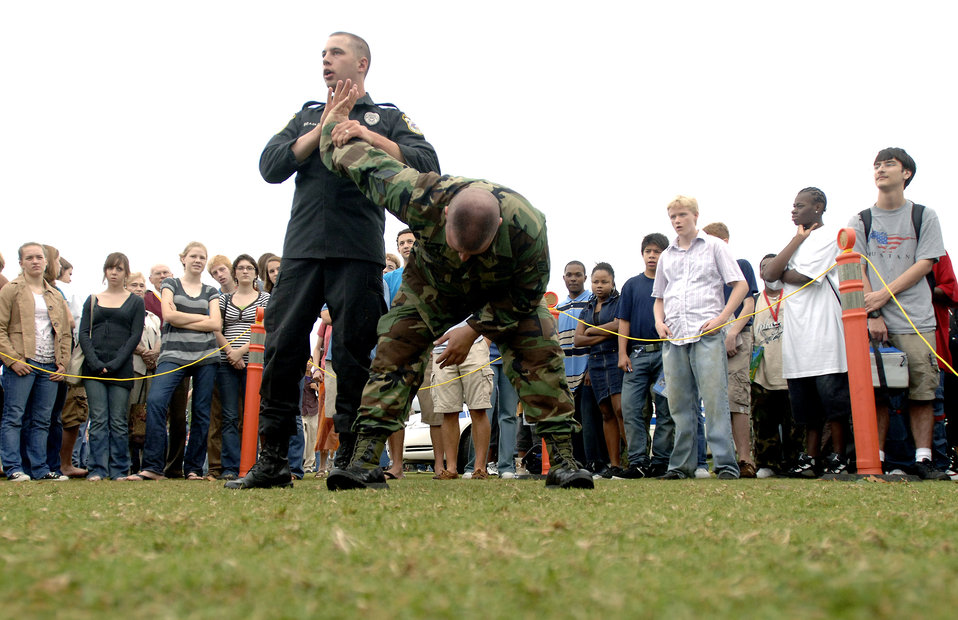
Airmen visit schools as part of Air Force Week Atlanta

Staff Sgt's. Dustin Beasley (left) and Chris Wallace demonstrate self-defense maneuvers to Marietta High School students as part of an Air Force Week Atlanta event Oct. 9 in Marietta, Ga. The event helped to educate students about the U.S. Air Force.